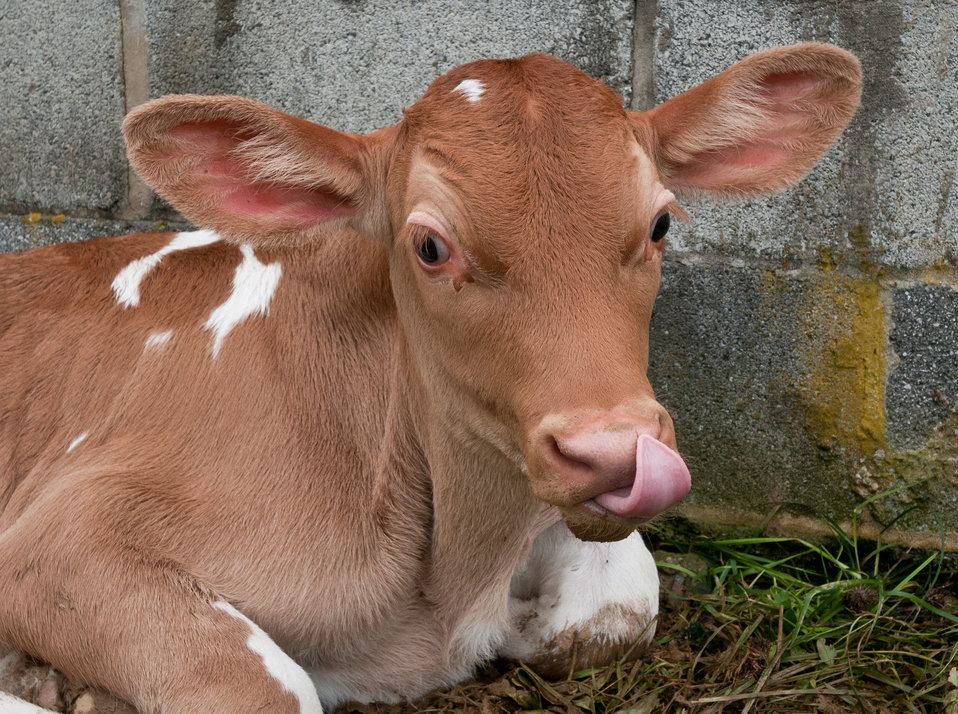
Less than a week old, this Guernsey calf weighs in at more than 170 pounds, and finds morning comfort against a cinderblock wall, on some soft ground, after an evening of summer rain at Nick’s Organic Farm, in Adamstown, MD, on Friday, July 12, 2013. She may grow up to provide nutritious Guernsey milk at the farm. The farm, owned by Nick Maravell, produces Black Angus beef, chicken, turkey, eggs, hay, soybeans, corn, alfalfa, orchard grass, rye; and other crops. The cattle are 100% grass-fed receiving certified organic pasture, certified organic hay (in winter), water and mineral salts mixed with sea kelp. The cattle are not fed hormones, antibiotics or animal products. Poultry feed from grain is ground from organic grain. The poultry also graze on organic pastures. The farm has conducted on-farm research with federal, state and non-profit agencies to refine organic practices. An organization such as the U.S. Department of Agriculture (USDA) Agricultural Research Service (ARS) center in Beltsville has been able to conduct research to improve organic crops and to breed and manage the cattle so that they have.